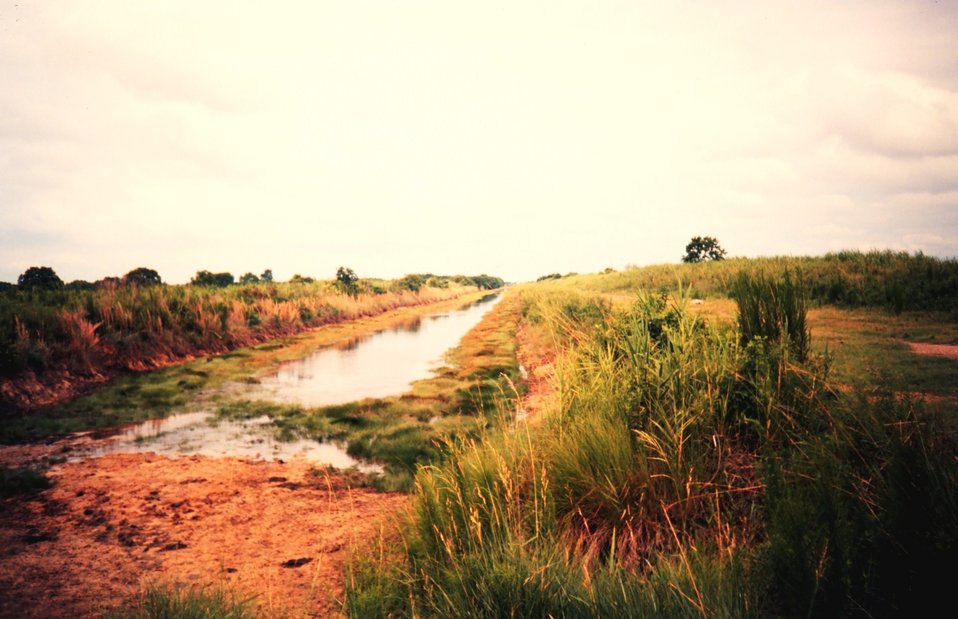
Canal used to drain property to convert and maintain former marsh land to pasture.